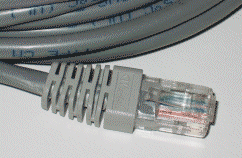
10BASE-T Cable. Picture taken by Duncan Lock and released into the Public Domain.